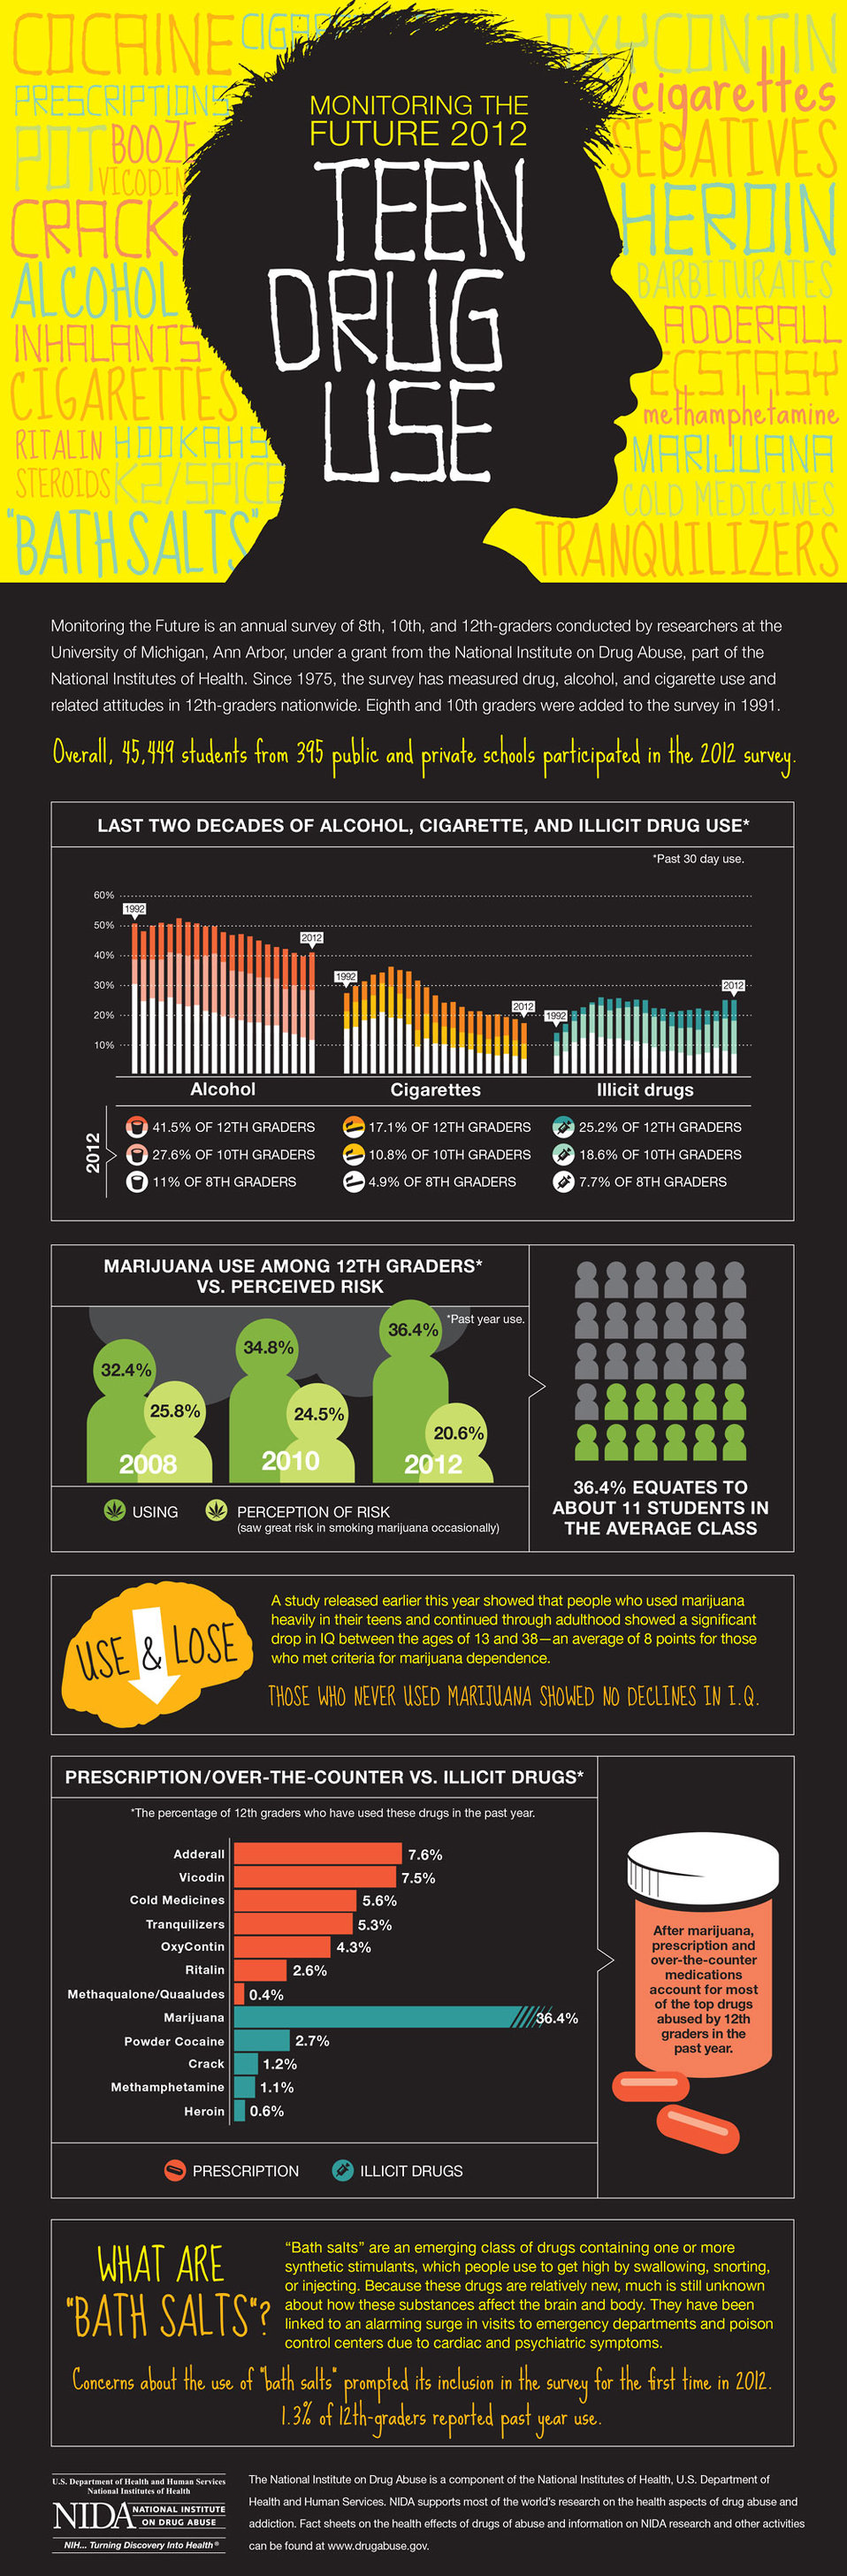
Monitoring the Future 2012 Survey Results

Text Description of Infographic

Monitoring the Future is an annual survey of 8th, 10th, and 12th-graders conducted by researchers at the University of Michigan, Ann Arbor, under a grant from the National Institute on Drug Abuse, part of the National Institutes of Health. Since 1975, the survey has measured drug, alcohol, and cigarette use and related attitudes in 12th-graders nationwide. Eighth and 10th graders were added to the survey in 1991. Overall, 45,449 students from 395 public and private schools participated in the 2012 survey.

Top figure: Last Two Decades of Alcohol, Cigarette, and Illicit Drug Use*
*Past 30 day use.
This graphic illustrates past 30 day alcohol, cigarette, and illicit drug use among 8th, 10th, and 12th graders from 1992 through 2012. In general, alcohol and cigarette use has decreased, and illicit drug use, which declined in the late 1990s and early 2000s, has been increasing in recent years. In 2012, past 30 day use in each category was:

Alcohol
12th graders: 41.5%
10th graders: 27.6%
8th graders: 11.0%

Cigarettes
12th graders: 17.1%
10th graders: 10.8%
8th graders: 4.9%

Illicit Drugs
12th graders: 25.2%
10th graders: 18.6%
8th graders: 7.7%

Second figure: Marijuana Use Among 12th Graders* vs. Perceived Risk
*Past year use.

Three points in time are shown—2008, 2010, and 2012— for marijuana use and the perception of risk (saw great risk in smoking marijuana occasionally) among 12th graders.

2008
Using - 32.4%
Perception of risk - 25.8% saw great risk in smoking marijuana occasionally

2010
Using - 34.8%
Perception of risk* - 24.5% saw great risk in smoking marijuana occasionally

2012
Using– 36.4%
Perception of risk – 20.6% saw great risk in smoking marijuana occasionally

Third Figure:
36.4% equates to about 11 students in the average class.

Fourth figure: Use & Lose
A study released earlier this year showed that people who used marijuana heavily in their teens and continued through adulthood showed a significant drop in IQ between the ages of 13 and 38—an average of 8 points for those who met criteria for marijuana dependence. Those who never used marijuana showed no declines in IQ.

Fifth figure: Prescription/Over-the-Counter vs. Illicit Drugs
After marijuana, prescription and over-the-counter medications account for most of the top drugs abused by 12th graders in the past year.

This list shows the percentage of 12th graders who have used the following drugs in the past year.

Prescription
Adderall – 7.6%
Vicodin – 7.5%
Cold medicines - 5.6%
Tranquilizers - 5.3%
OxyContin – 4.3%
Ritalin - 2.6%
Methaqualone/Quaaludes - 0.4%

Illicit Drugs
Marijuana – 36.4%
Powder Cocaine - 2.7%
Crack - 1.2%
Methamphetamine – 1.1%
Heroin - 0.6%

Bottom figure: What Are “Bath Salts”?
“Bath salts” are an emerging class of drugs containing one or more synthetic stimulants, which people use to get high by swallowing, snorting, or injecting. Because these drugs are relatively new, much is still unknown about how these substances affect the brain and body. They have been linked to an alarming surge in visits to emergency departments and poison control centers due to cardiac and psychiatric symptoms. Concerns about the use of “bath salts” prompted its inclusion in the survey for the first time in 2012. 1.3% of 12th-graders reported past year use.

The National Institute on Drug Abuse is a component of the National Institutes of Health, U.S. Department of Health and Human Services. NIDA supports most of the world’s research on the health aspects of drug abuse and addiction. Fact sheets on the health effects of drugs of abuse and information on NIDA research and other activities can be found at www.drugabuse.gov.